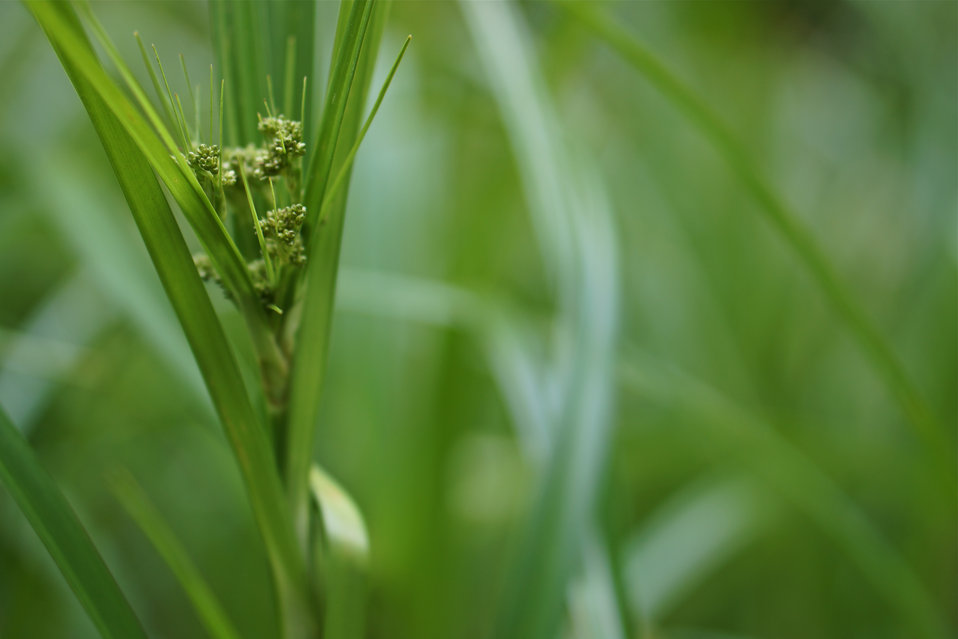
Sedge flowers emerging

In May, bog conservationists from Tennessee, North Carolina, and Georgia convened in the north Georgia mountains for the spring, 2014 meeting of the Bog Learning Network. The event provided an opportunity for biologists to see, first hand, the result of management efforts at two north Georgia bogs. More importantly, the outings provided an opportunity to share innovative approaches to bog management, such as the role of the Georgia Plant Conservation Alliance in conserving rare plants and coordinating a cadre of volunteers to work on bog management.

The Bog Learning Network was convened in the winter of 2013 as a way to bring together people working for bog conservation across the Southern Appalachians. Southern Appalachian bogs are one of North America’s rarest habitats and home to many rare plants and animals.